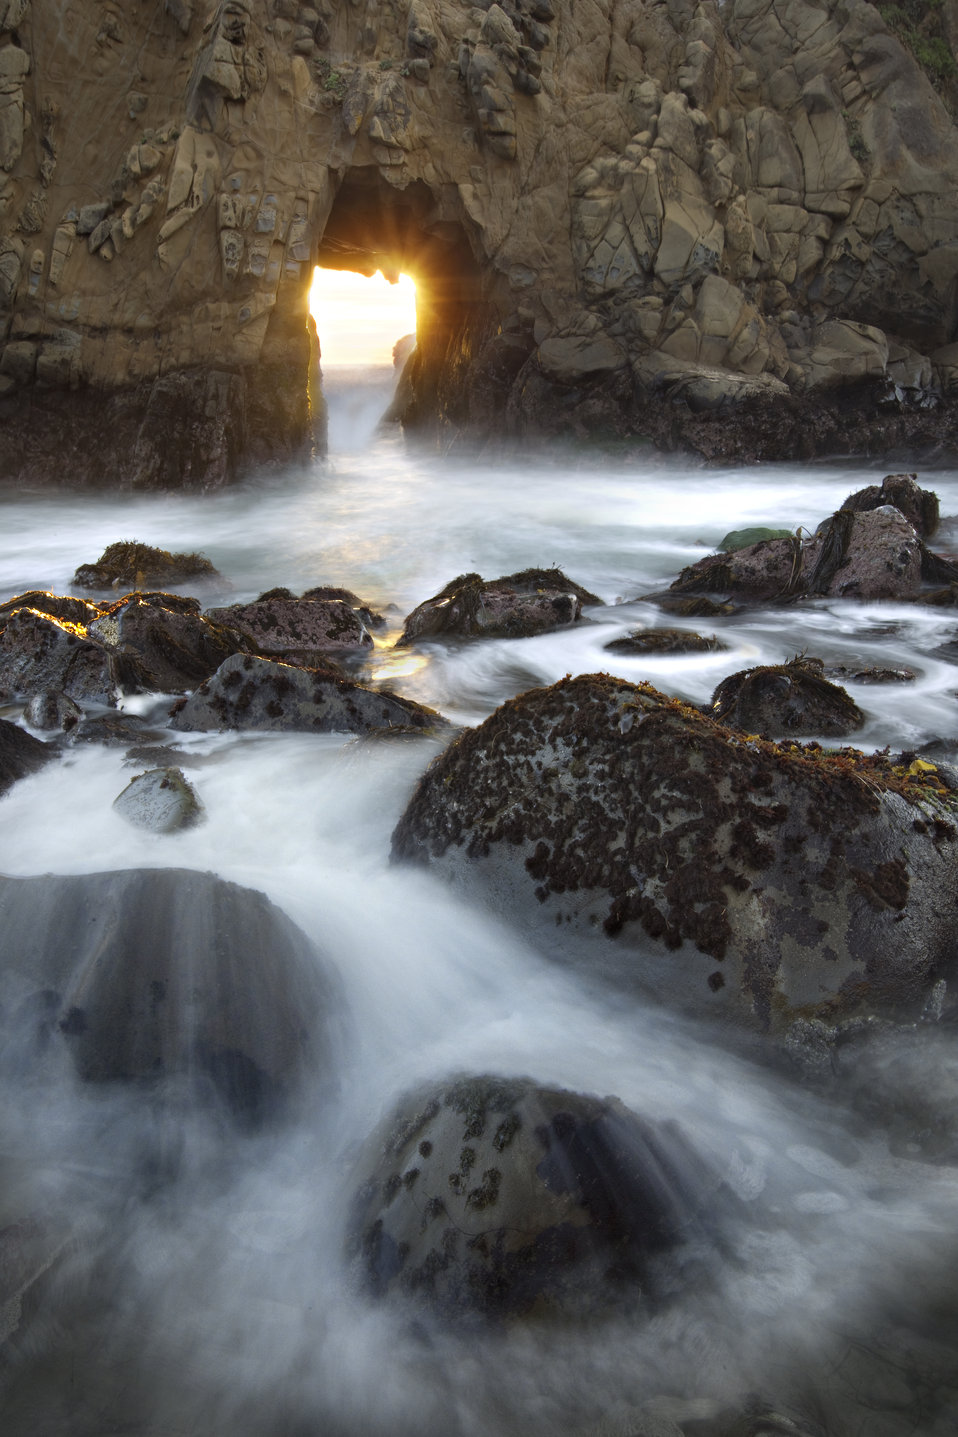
Cental California Coast